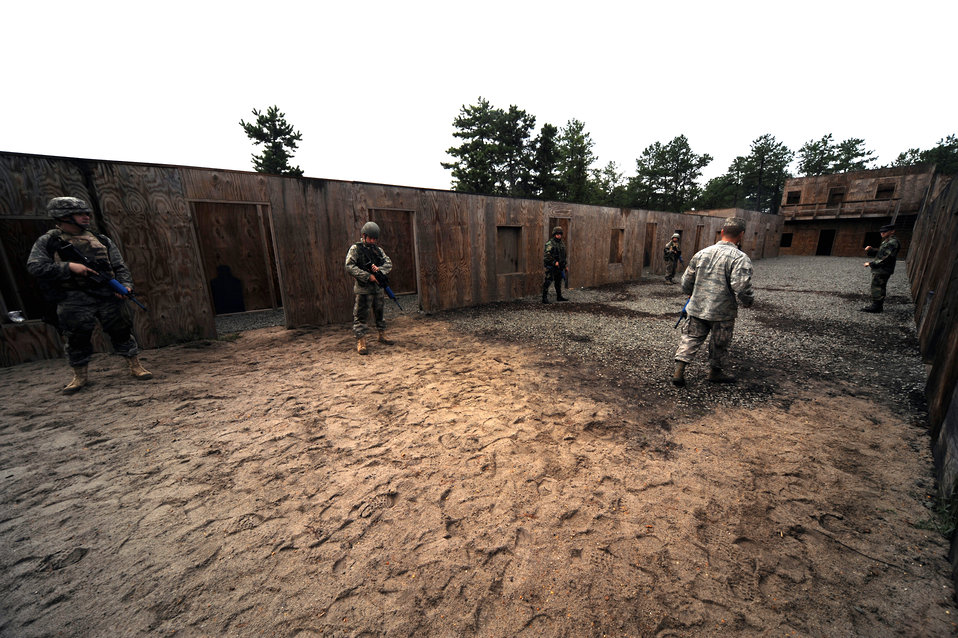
Learning the rules of engagement

Students partcipate in contingency skills basic training during Oct. 1 at Fort Dix, N.J. Air Force legal career field members learned rules of use of force, engagement and expeditionary basics for deployments. The training is held for three days prior to them attending the Advanced Contingency Skills Training Course taught by the Air Force Expeditionary Center's 421st Combat Training Squadron on Fort Dix.